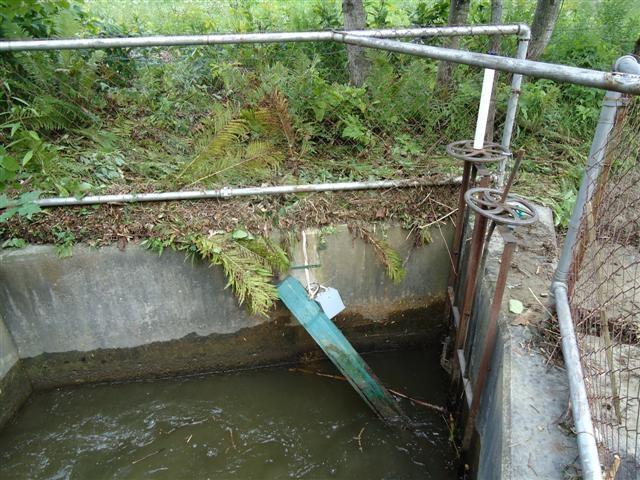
Storm damage at Eisenhower National Fish Hatchery in Vermont

Destroyed water level sensor at intake.